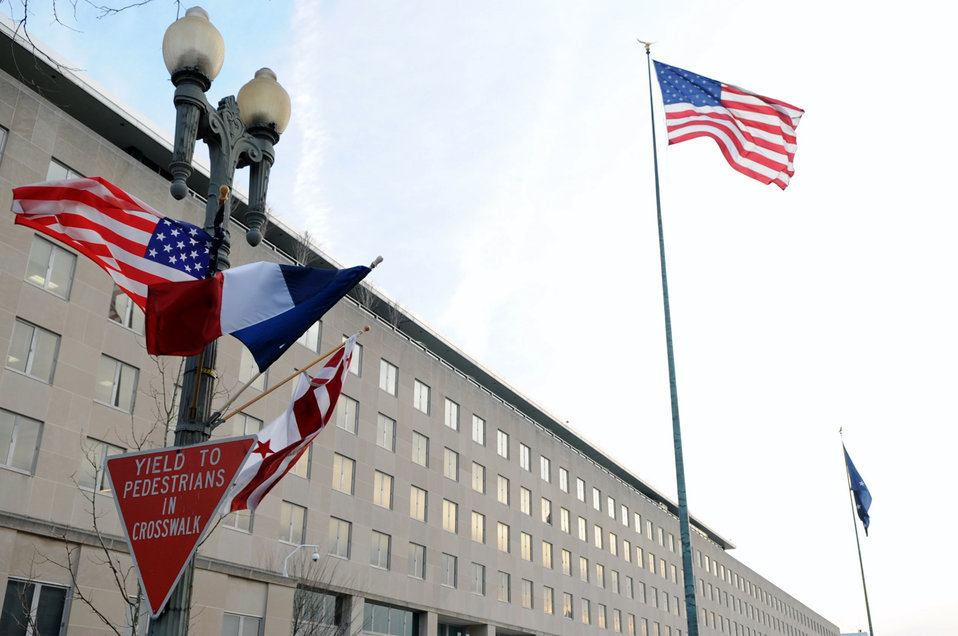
The French Flag on Display in Front of State Department Before President Hollande's Visit

The blue, white, and red tricolor French flag joins the U.S. and District of Columbia flags on a lamppost outside the Department of State on February 10, 2014, one day before French President Francois Hollande visits for lunch amid a state visit to Washington, D.C.